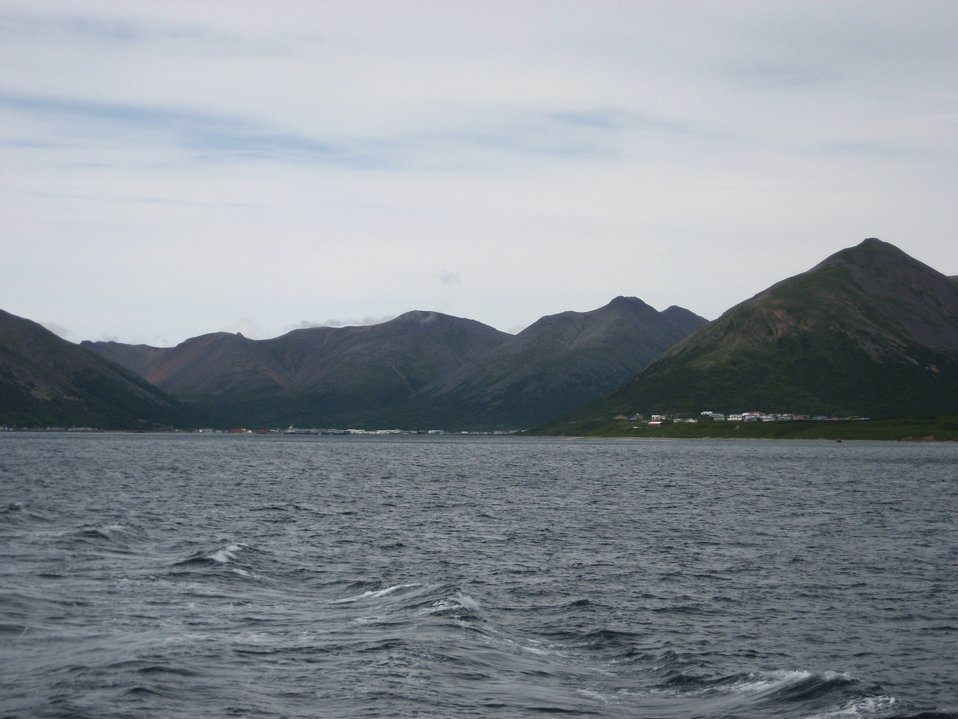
King Cove from at sea.